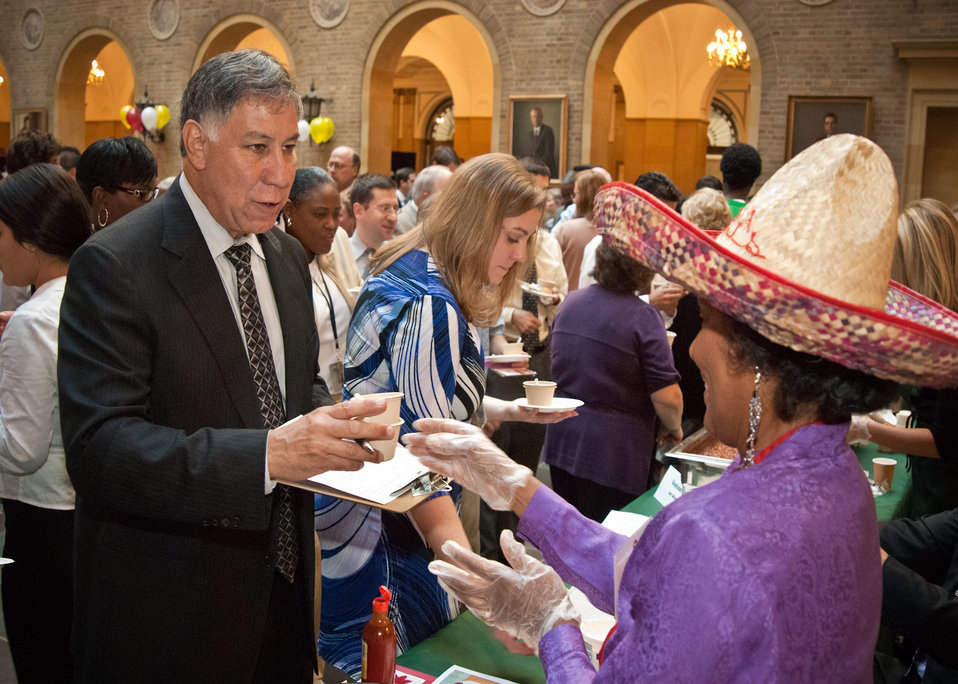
Ed Avalos, Undersecretary, Marketing and Regulatory Programs (left) selects a chili sample from Altheria Myers (right), Agricultural Research Service during the U. S. Department of Agriculture Second Annual Chili Challenge Contest to celebrate Hispanic Heritage Month at USDA in Washington, DC, on Thursday, October 6, 2011. Celebrity chefs and USDA employee chef volunteers used chili’s in delicious recipes to celebrate Hispanic cuisine. USDA’s traditional Chili Challenge trophy will be awarded to this year’s best-tasting chili. The judges for the challenge will be Chefs Toni Tipton-Martin, Chef Pedro Matamoros from 8407 Kitchen Bar, Corporate Executive Chef Lance Lemin, Ed Avalos, Undersecretary, Marketing and Regulatory Programs and Krista Hardin, Chief of Staff.